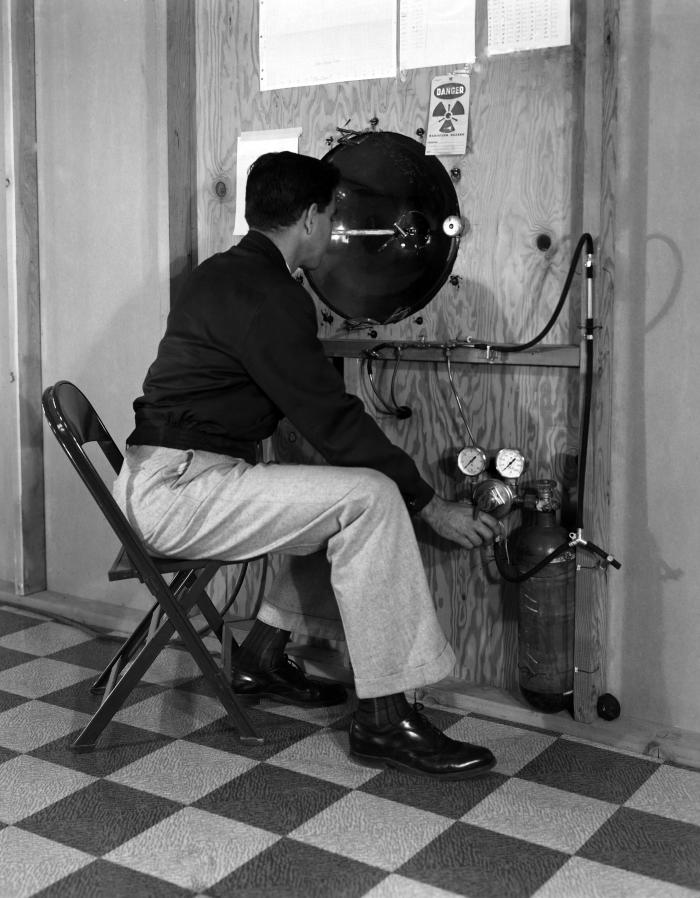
This historic image, provided by the Center for Disease Control's (CDC), National Institute for Occupational Safety and Health (NIOSH), depicted a technician wearing his office clothes, but no lab coat, seated at a simulated uranium mine workstation. This test center was located at a Salt Lake City, UT, Public Health Service (PHS), Rockefeller Foundation, International Health Division (IHD) field station. As he was observing what was transpiring behind a wooden wall through a circular portal, the technician's right hand was adjusting a valve on a small compressed-gas tank. Not knowing the level of contaminants produced, and expelled from the simulated workstation, wearing only a white coat, may, or may not have been what today would be deemed adequate protection against contamination. See PHIL 9580 for a similar view of this scenario.